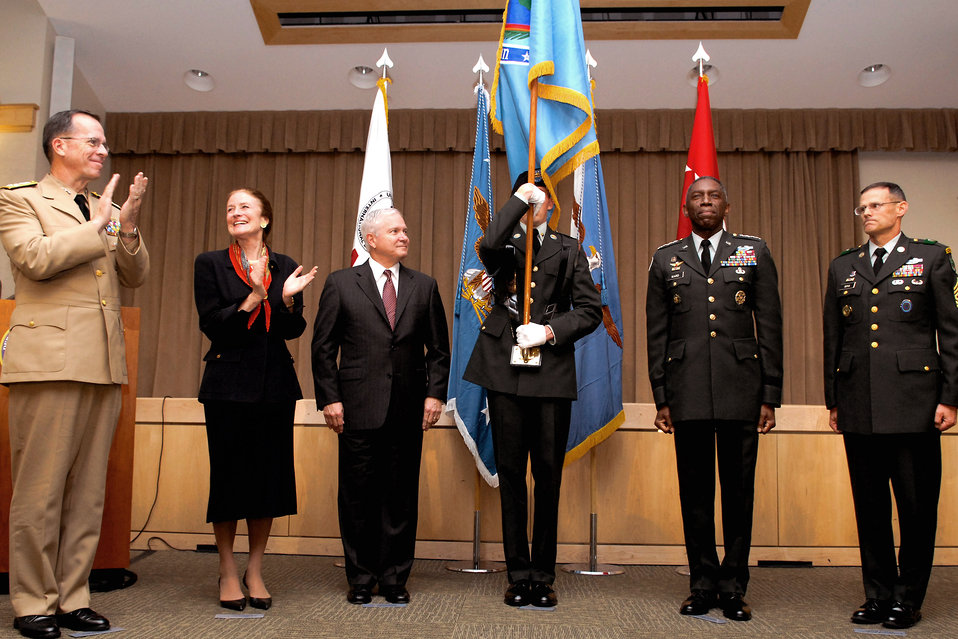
U.S. Africa Command activated

From left, Navy Adm. Mike Mullen, chairman of the Joint Chiefs of Staff; Henrietta H. Fore, administrator for the U.S. Agency for International Development and director of Foreign Assistance; Robert M. Gates, secretary of defense; the flag bearer; Army Gen. William E. Ward, commander of the newly activated U.S. Africa Command; and Army Command Sgt. Maj. Mark S. Ripka, command sergeant major for AFRICOM, celebrate the activation of the unified command Oct. 1 during a ceremony in the Pentagon conference center.